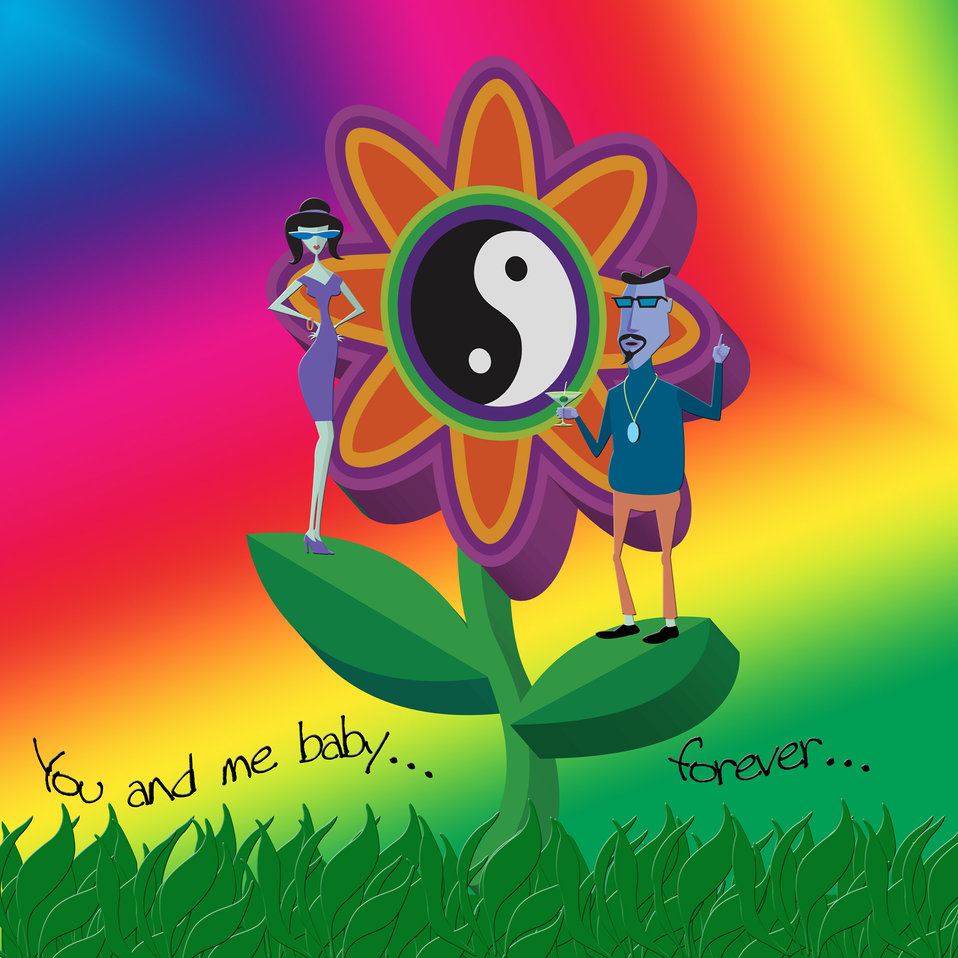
You and me baby

Meet the insane's an adorable couple stuck in the 70's..